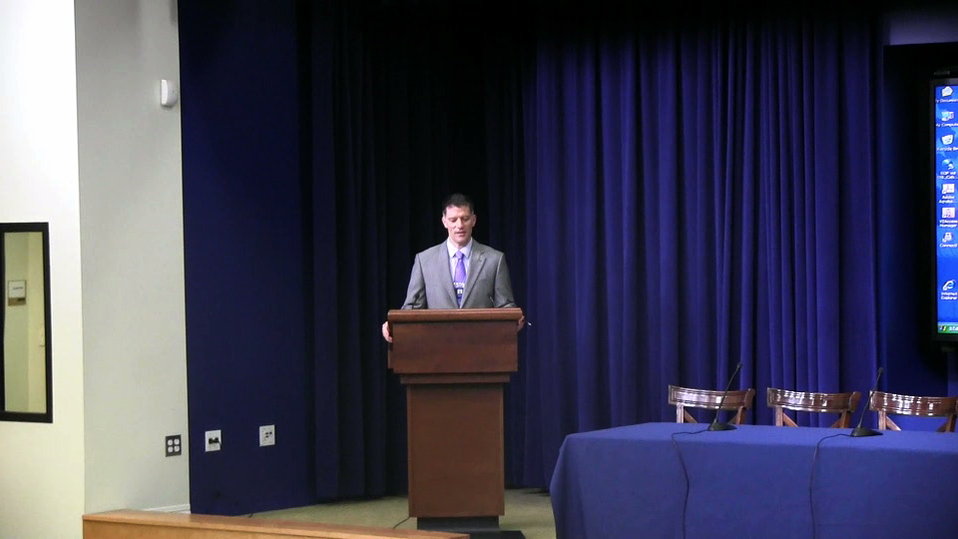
Colfax1